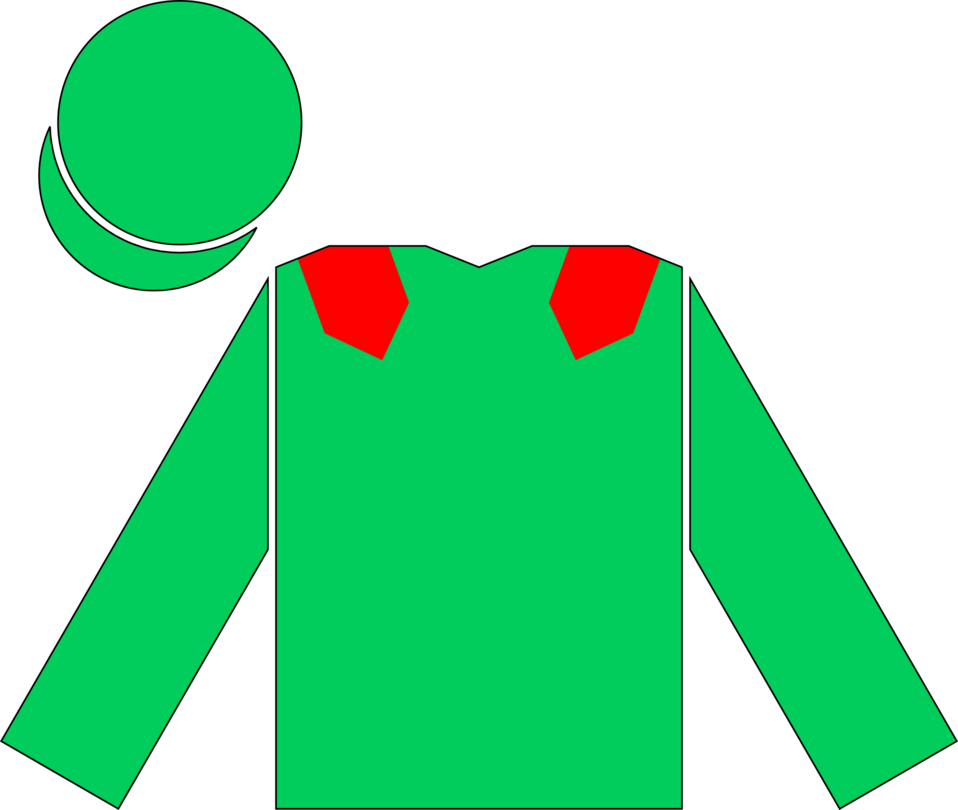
The en:racing silks of the Aga Khan, as worn by the jockey of en:Sinndar to victory in the en:2000 Epsom Derby.